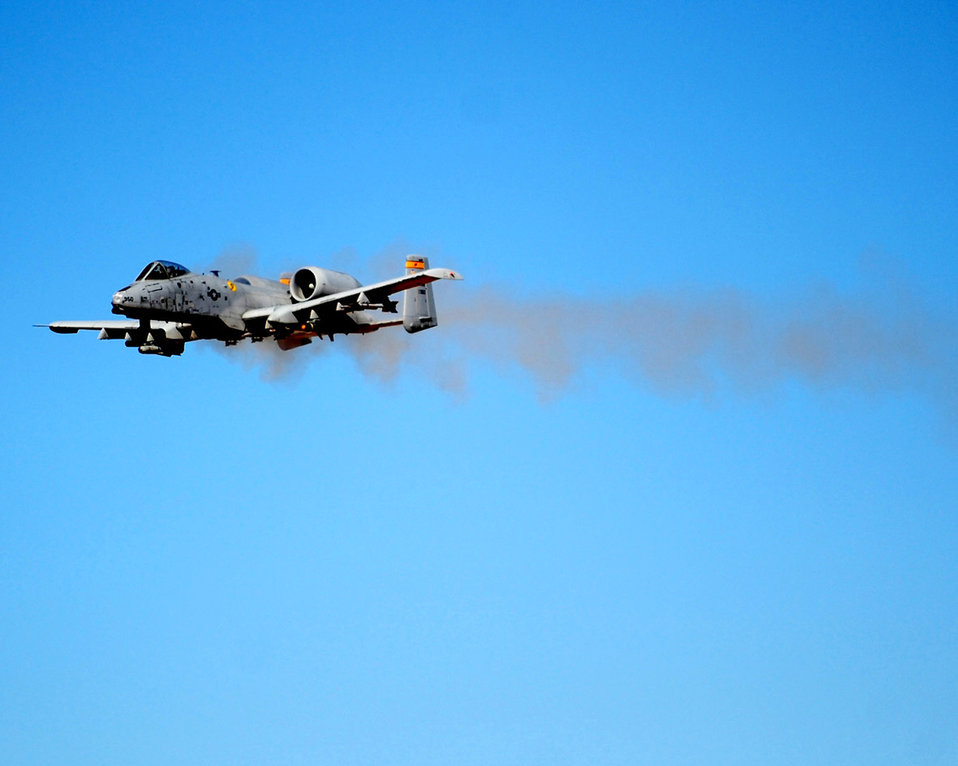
Do I hear thunder?

First Lt. Dan Griffin, a pilot from the 358th Fighter Squadron, fires the 30 mm Gatling gun on the A-10 Thunderbolt II for the first time at the Barry M. Goldwater Range in Arizona May 3, 2010. Lieutenant Griffin is a student in the A-10C Pilot Initial Qualification course.